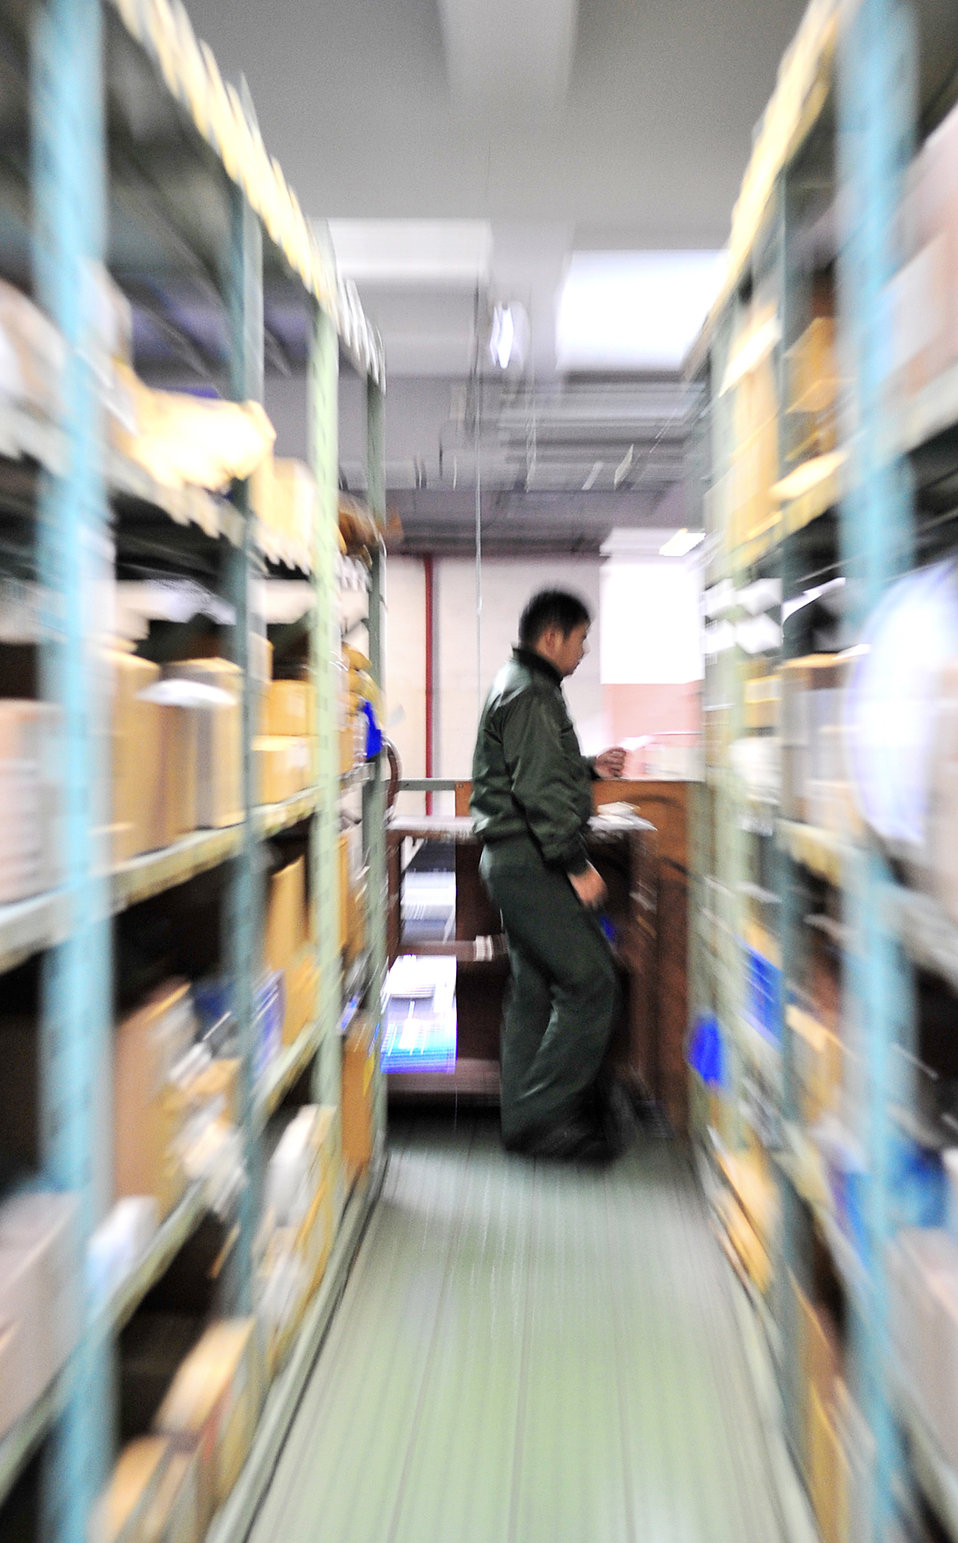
Bilateral training strengthens American, Japanese ties

A Japan Air Self Defense Force member learns the process of issuing military supplies from Airmen at the 18th Logistics Readiness Squadron Feb. 16, 2010 at Kadena Air Base, Japan.